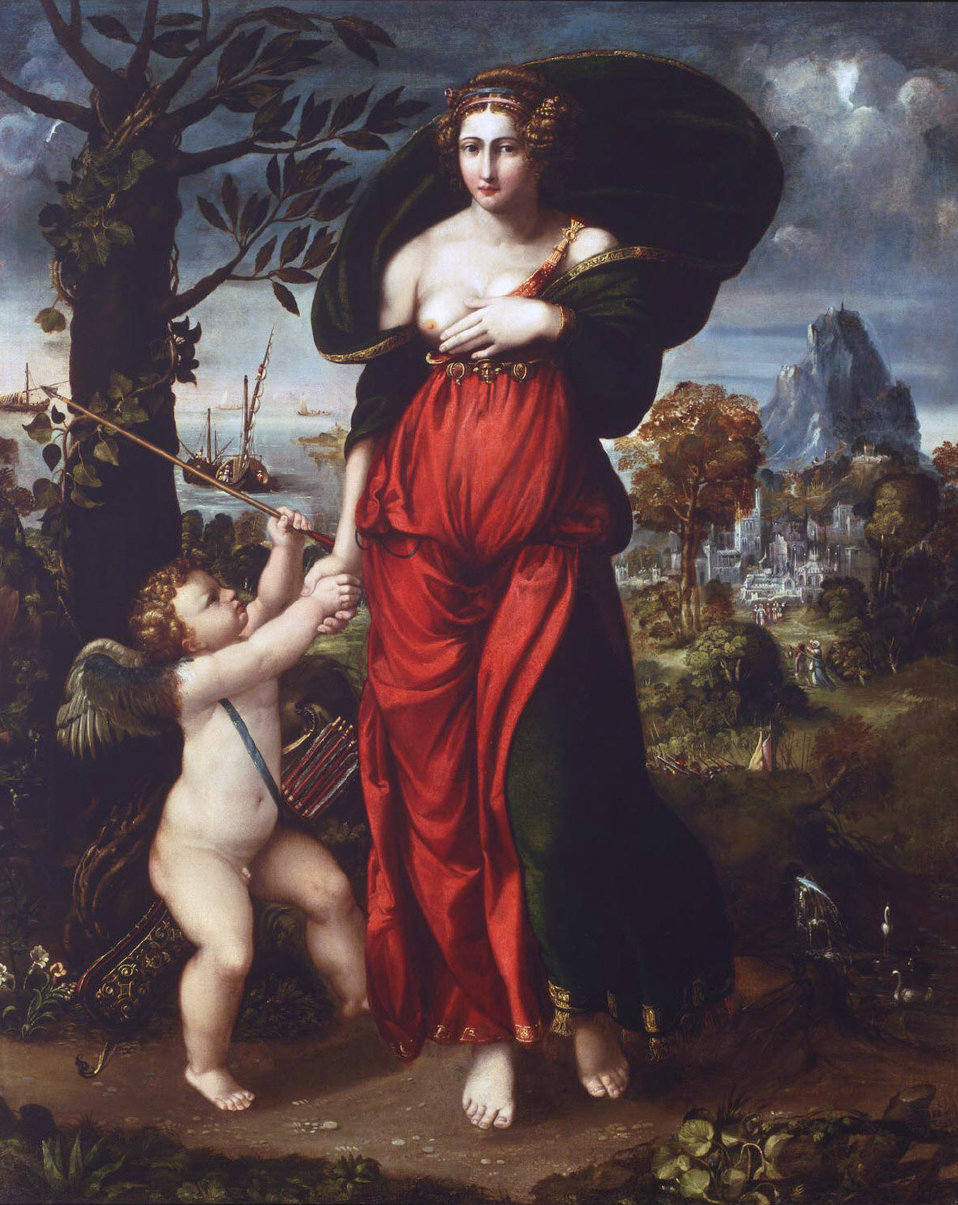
'Venus and Cupid', oil on canvas painting by Battista Dossi (Battista de' Luteri), c. 1540, Philadelphia Museum of Art